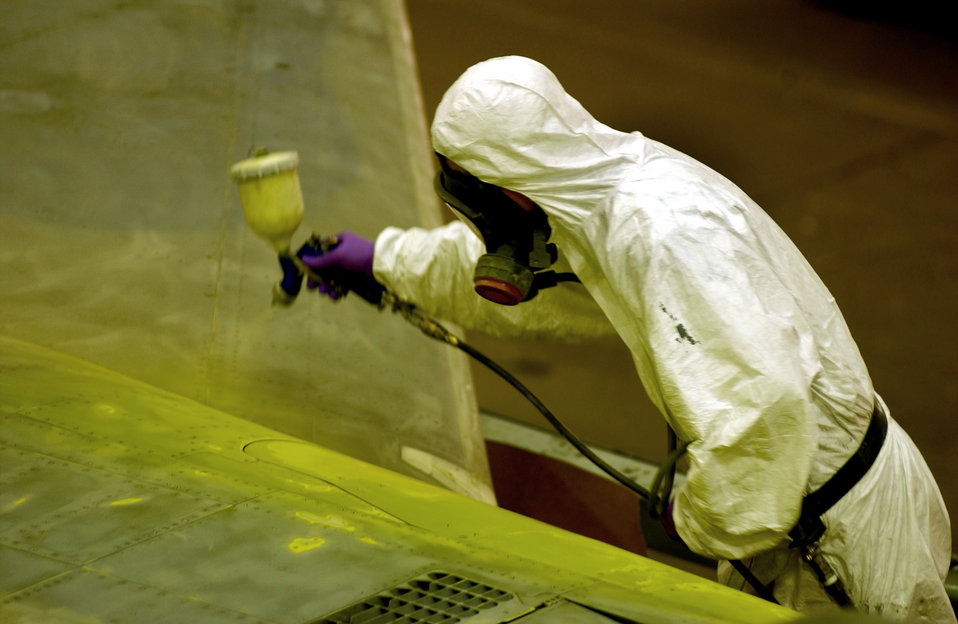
Fresh paint

ROYAL AIR FORCE LAKENHEATH, England -- Russ Cochran airbrushes a new coat of primer onto an F-15 Eagle. The new paint will prevent aircraft metals from corroding. Mr. Cochran is an aircraft structural maintainer with the 48th Equipment Maintenance Squadron.